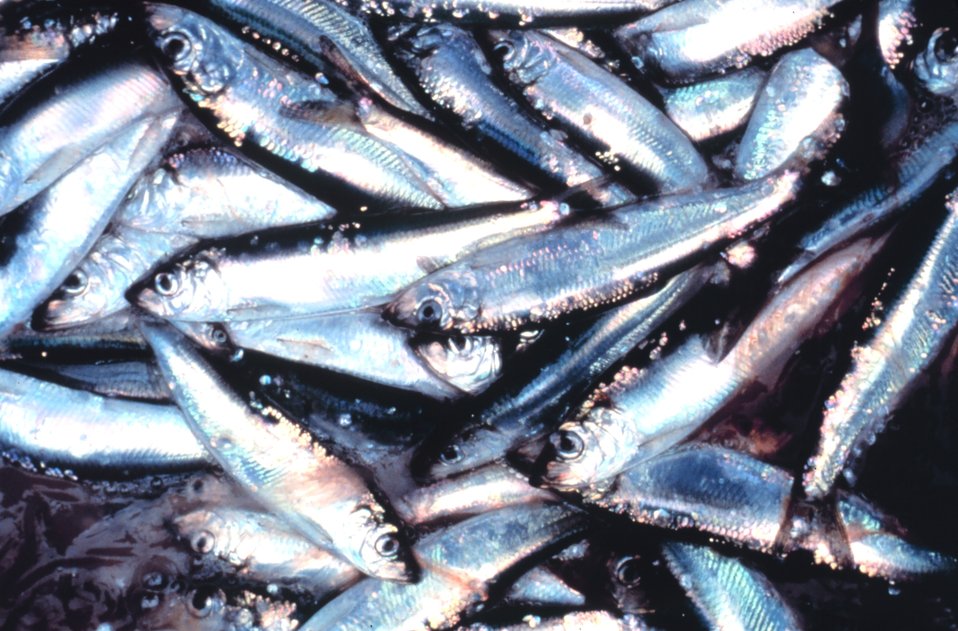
Dead fish